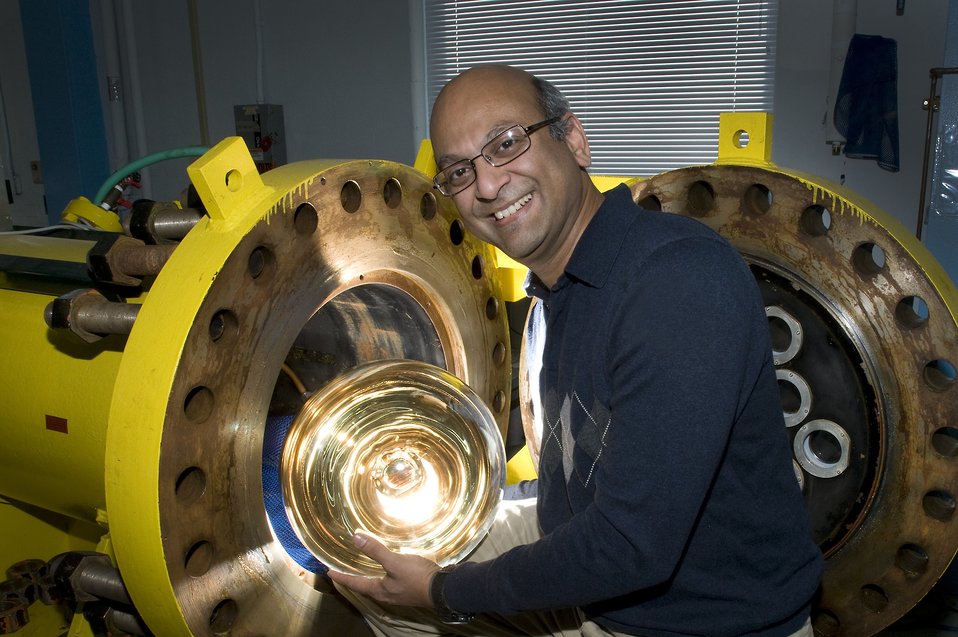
Brookhaven National Laboratory physicist is holding a photomultiplier tube of the type which will be used in the Long Baseline Neutrino Experiment (LBNE).

The experiment searches to unlock the mysteries of neutrinos that permeate the world around us. BNL is studying the light-mass neutrino could reveal an imprint of asymmetric behavior from a heavier cousin neutrino that existed at the time of the Big Bang and tipped the scales of the universe to allow baryonic matter to dominate antimatter for the proposed LBNE.